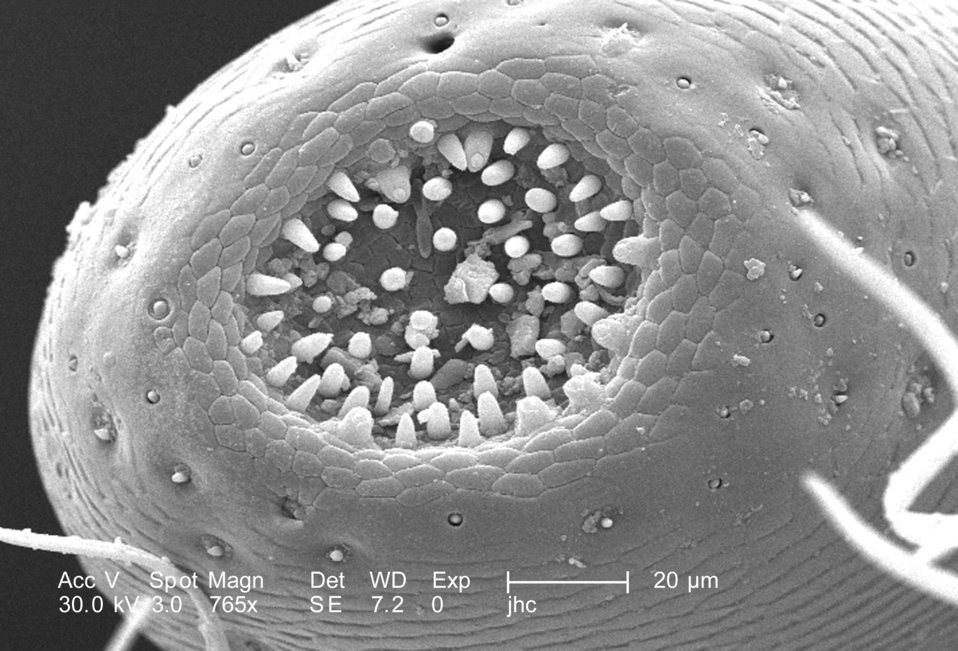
At a magnification twice that of PHIL 9932, 765X, this scanning electron micrograph (SEM) revealed even more of the morphologic details found at the tip of this adult 'figeater' beetle's, Cotinis mutabilis, maxillary 'galea', which due to its shape, was given this Latin name for 'helmet'. The galea is located just medial to another, more prominent maxillary appendage, the palpus. Note the concave configuration at the distal tip of the galea, and how there are numerous pointed protuberances inside this concavity, which are most probably sensorial in nature. See PHIL 9934 for an additional view of this structure at an even greater magnification.